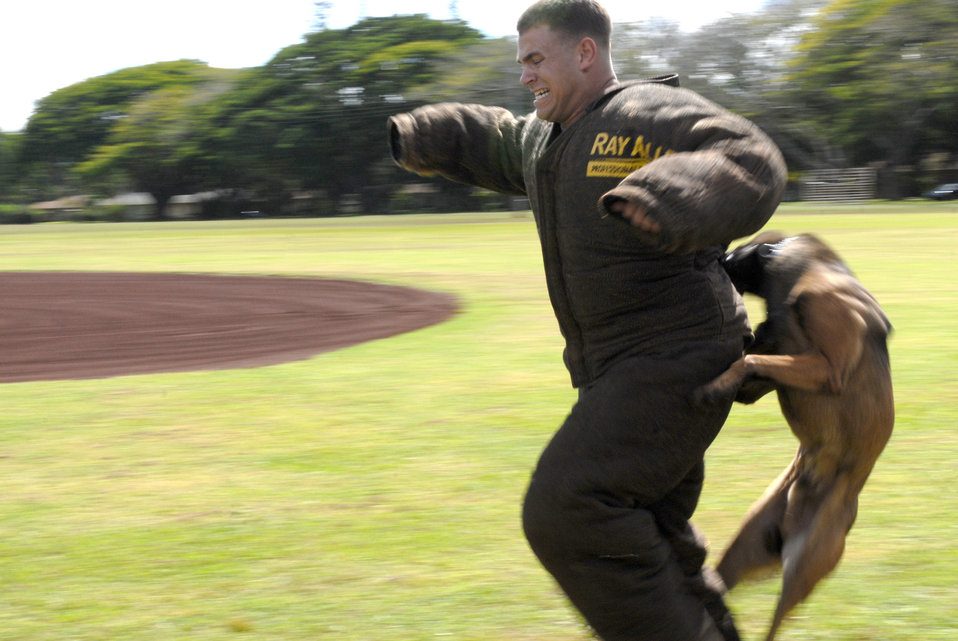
MWD competition

Jimmy, a Belgian Malinois attacks a decoy during the 2010 Hawaiian Islands Working Dog Competition Nov. 19, 2010, at Schofield Barracks, Hawaii. Jimmy and his handler, Staff Sgt. Ricky Renfroe, won the handler protection/aggression and hardest-hitting dog competitions. They are assigned to the 647th Security Forces Squadron at Joint Base Pearl Harbor-Hickam.